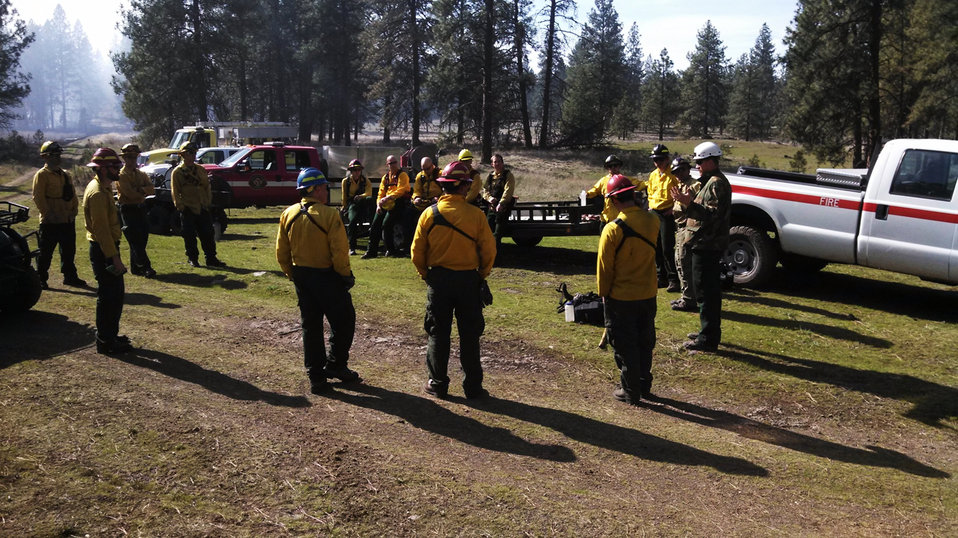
After Action Review

Federal, city and county cooperators participate in an After Action Review, after completing a prescribed burn in the Hale Management Unit.